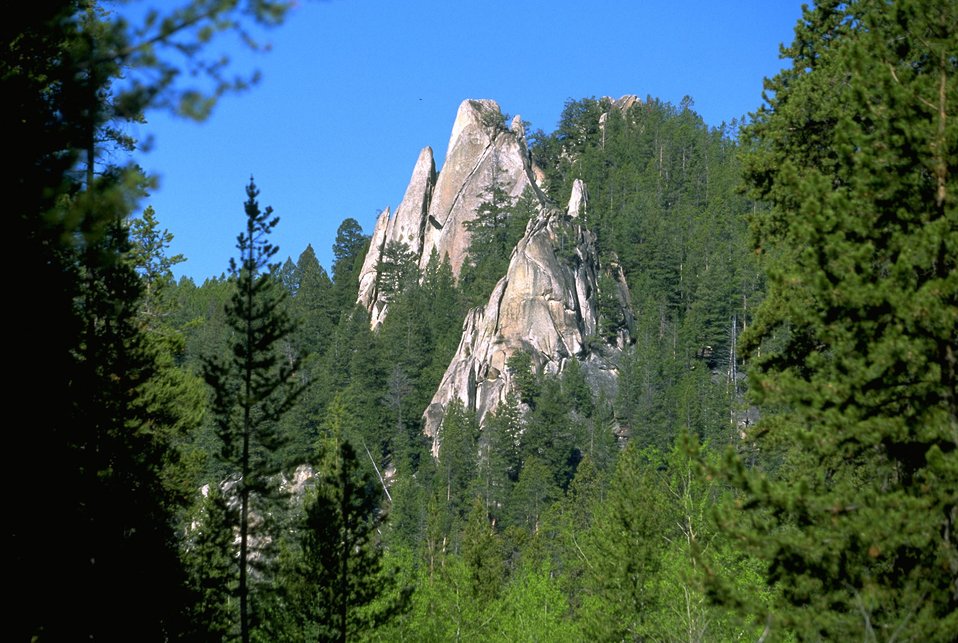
Rock formation